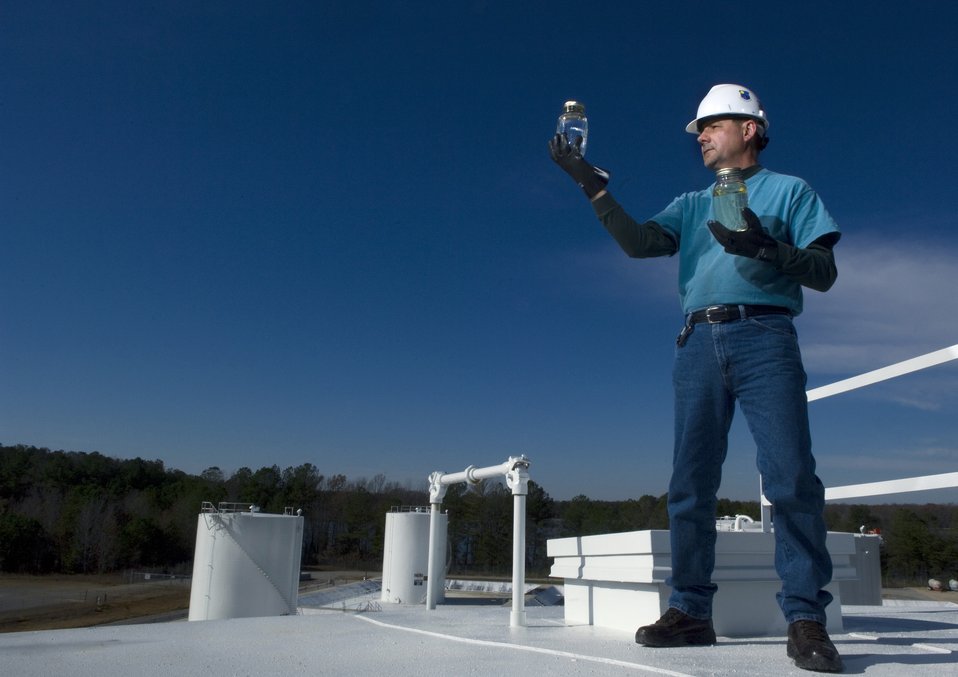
Lieutenant's oversight mission vital to Air Force testing

Retired Master Sgt. James Lucas holds up a jar of Fischer-Tropsch produced synthetic fuel, which is mixed with JP-8 jet fuel to produce an alternate fuel source Dec. 4 at Arnold Air Force Base, Tenn. The Air Force is testing the alternative fuel to help reduce U.S. dependancy on foreign oil. Mr. Lucas is a contracted outside machinist for the Arnold Engineering Development Center.